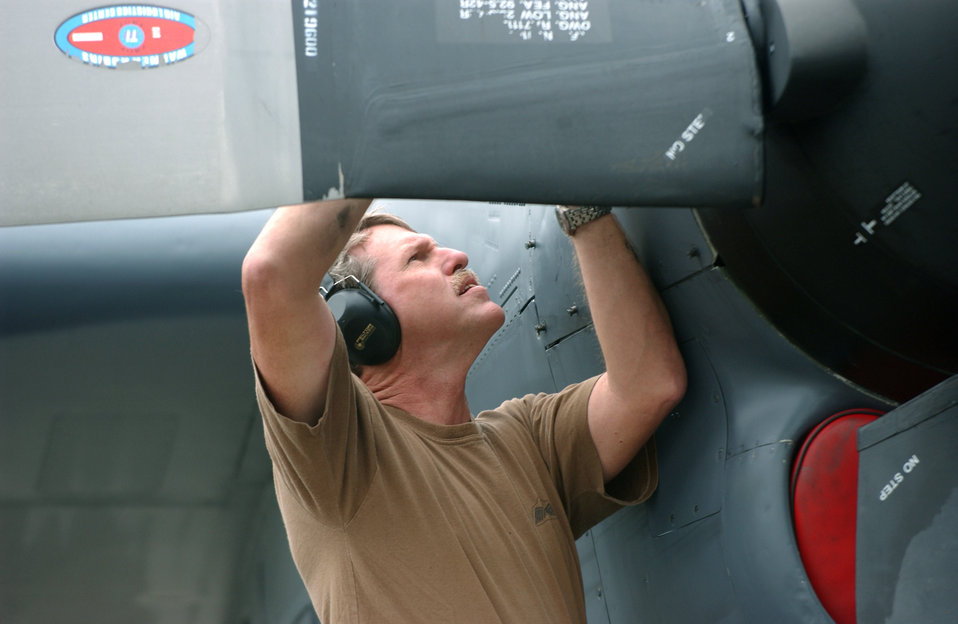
Reservists arrive in Uruguay for exercise

PUNTA DEL ESTE, Uruguay -- Master Sgt. Bill McIntyre performs preventive maintenance on the engines of an MC-130P Combat Shadow while on temporary duty here supporting Unitas 2004. The exercise involves navies from the United States, Spain, Brazil, Uruguay and Argentina, plus the U.S. Coast Guard and U.S. Air Force. Sergeant McIntyre is assigned to the 5th Special Operations Squadron at Eglin Air Force Base, Fla.